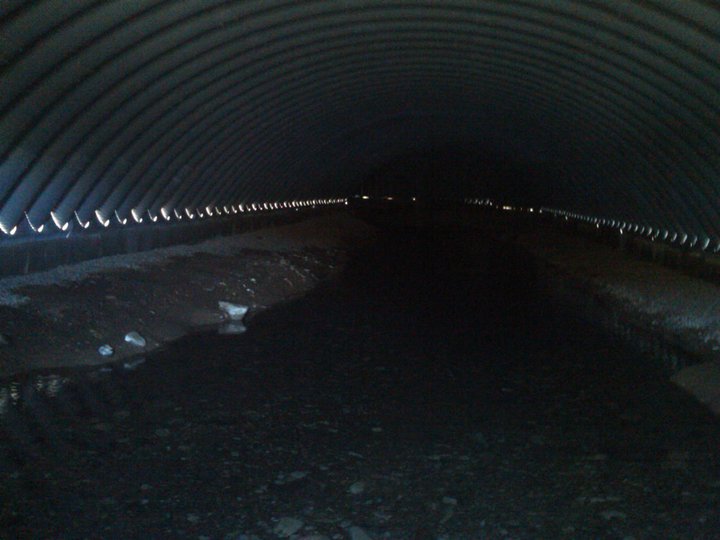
Ennis National Fish Hatchery Building

Inside the building where the spring emerges from the ground. This building was built to protect against pollutants and diseases such as whirling disease.